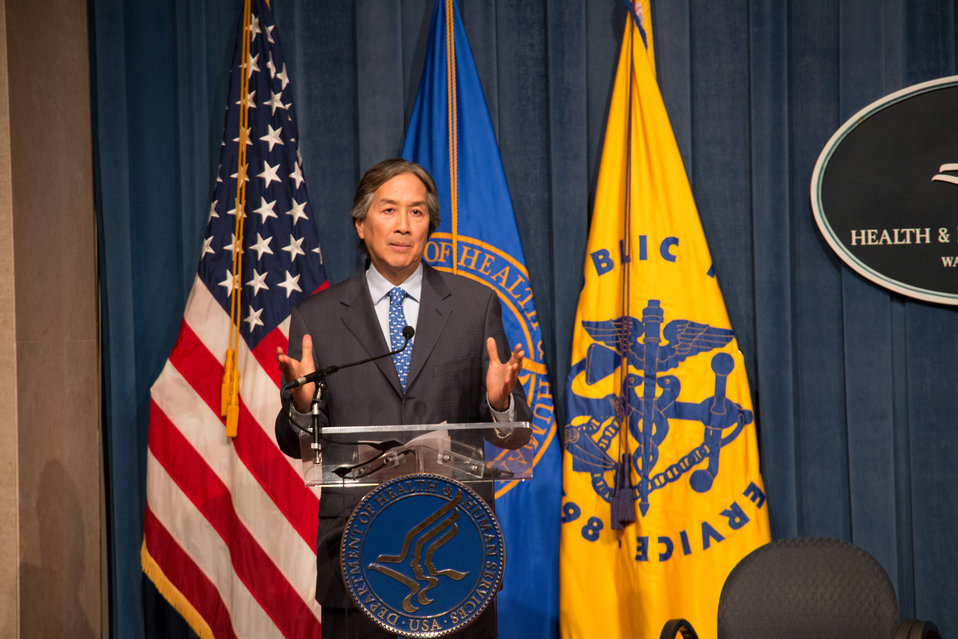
VHAP Launch (211 of 511)